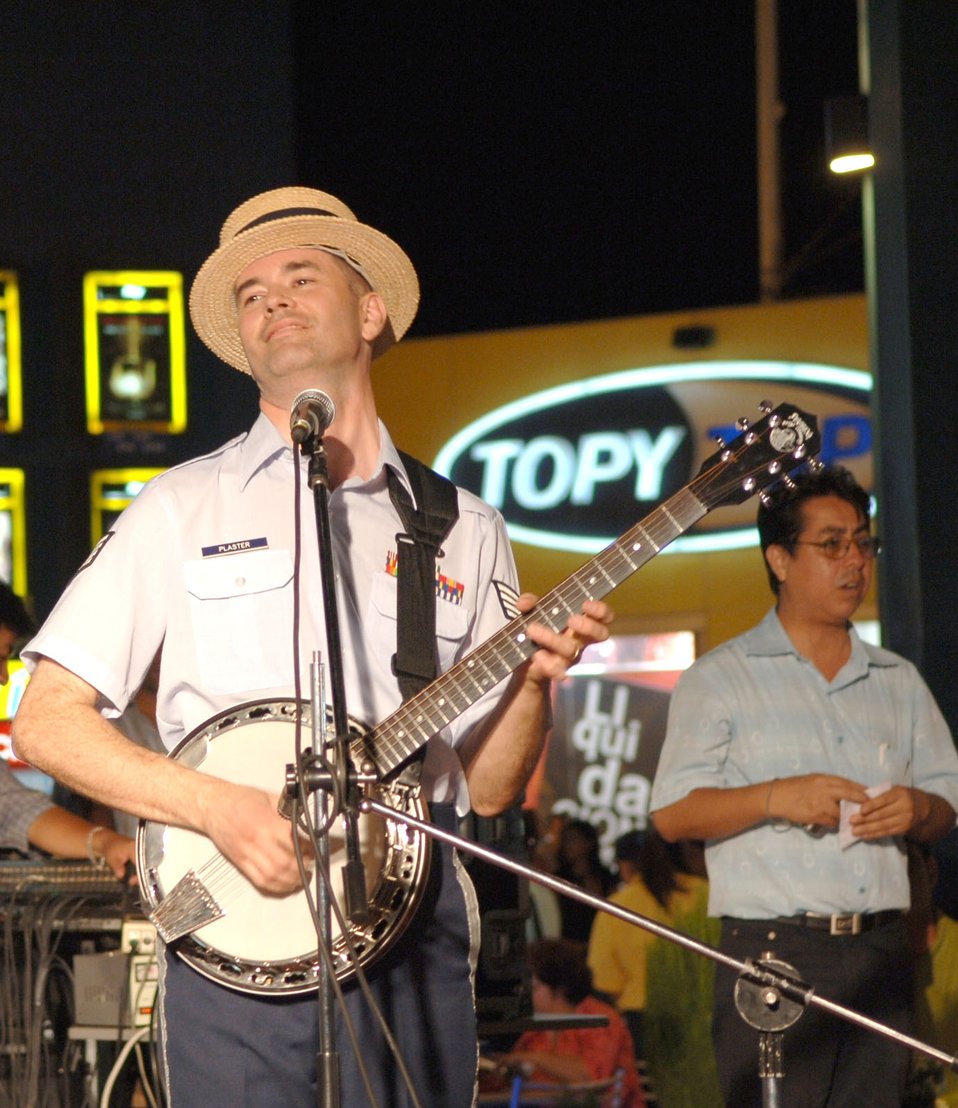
Air Force band builds relations in Peru

Staff Sgt. Daniel Plaster plays at a mall in Chiclayo, Peru. Sergeant Plaster, along with six other band members from the Air National Guard Band of the Southwest, were in Peru to support the Falcon and Condor 2007, a joint military exercise and air show that provides the U.S. Air Force the opportunity to work together and build relationships with military and civilian leaders of Peru.